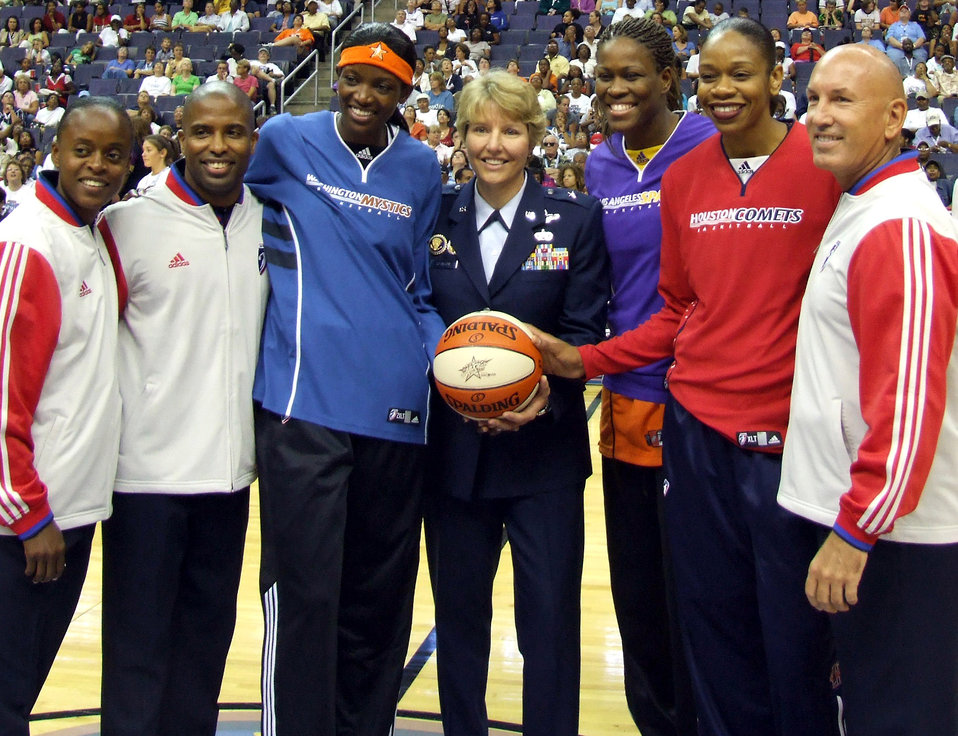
Women's basketball salutes troops, families

Brig. Gen. Michelle D. Johnson (center), the director of Public Affairs, participates in a pre-game ceremony with players at the Women's National Basketball Association's annual All-Star Game held July 15 at the Verizon Center in Washington, D.C.